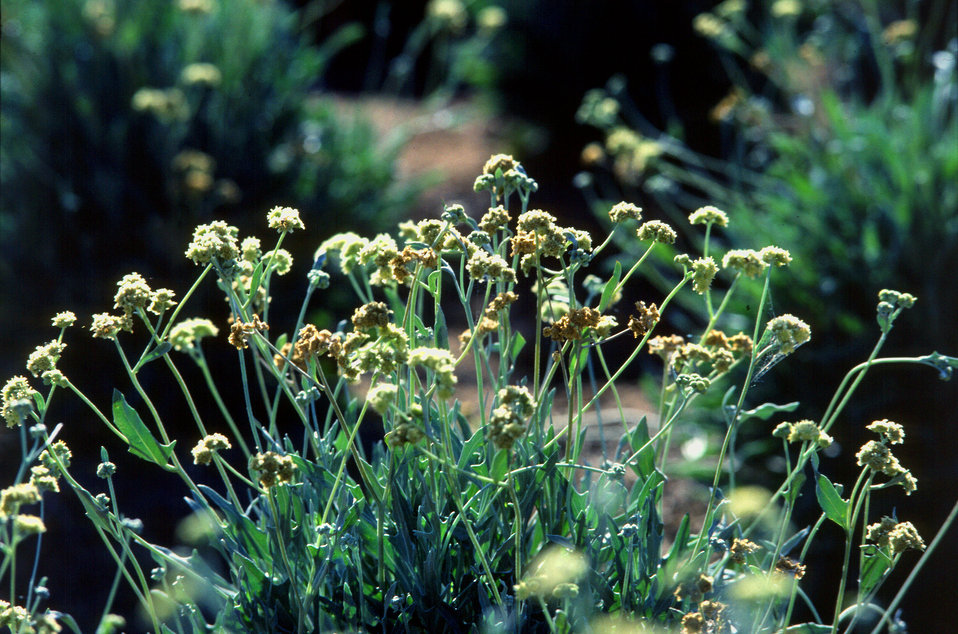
The guayule plant (Parthenium argentatum) is a flowering shrub that is native to the southwestern U. S. and northern Mexico. The plant can be used as an alternate source of latex that is also hypoallergenic. Guayule grows well in arid and semi-arid areas and is resistant to many pests and diseases.